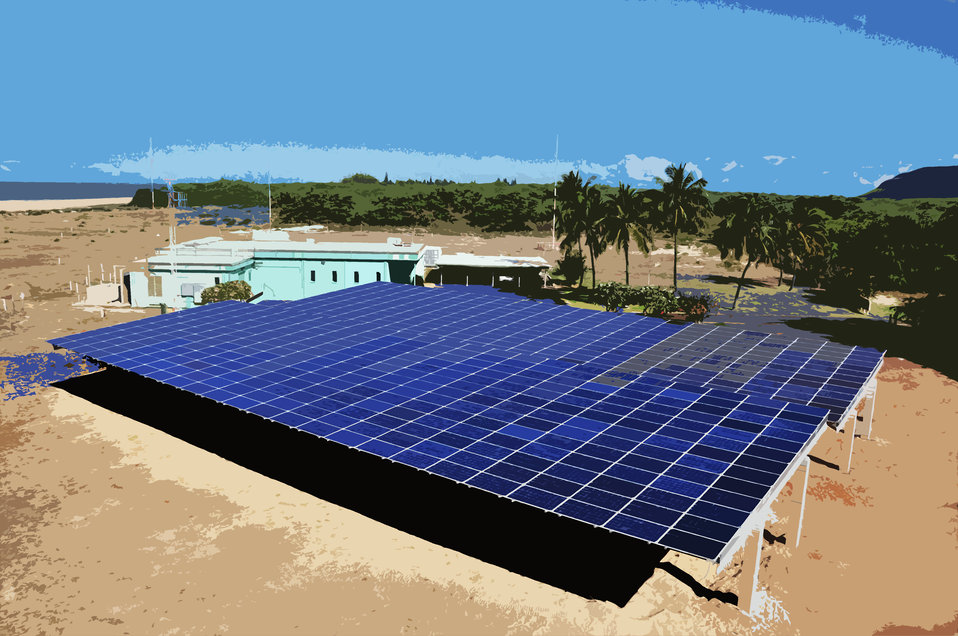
Radio Array; WWVH

Illustration of the solar array that powers NIST radio station WWVH on the island of Kauai, Hawaii.